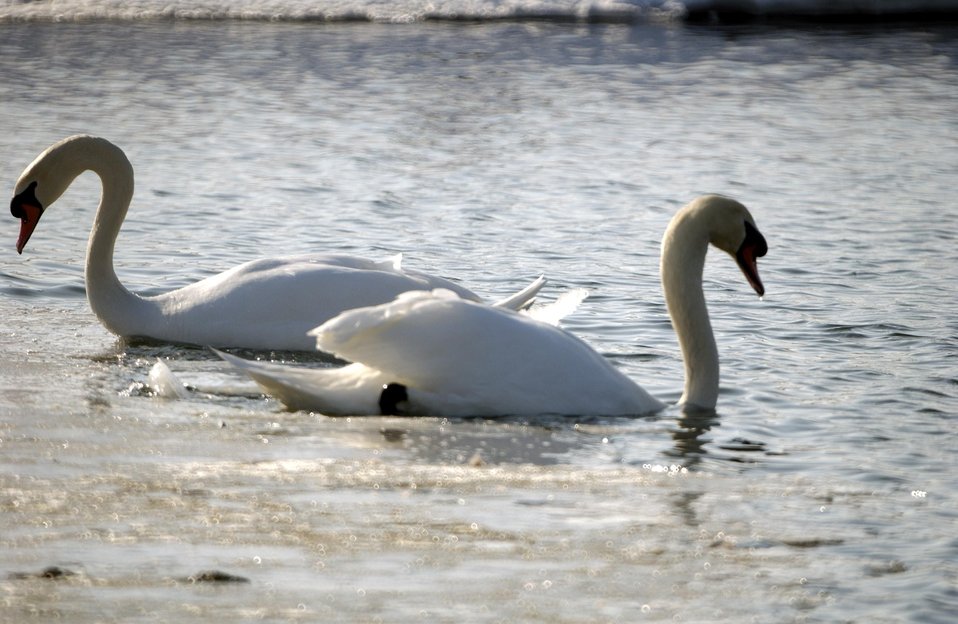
MUTE SWANS IN THE MAIN INJECTOR POND OF THE FERMI NATIONAL ACCELERATOR LABORATORY SITE.

THE SITE IS HOME TO A VARIETY OF BIRDS AND VEGETATION. THE FERMI NATIONAL ACCELERATOR LAB ADVANCES THE UNDERSTANDING OF THE FUNDAMENTAL NATURE OF MATTER AND ENERGY BY PROVIDING LEADERSHIP AND RESOURCES FOR QUALIFIED RESEARCHERS TO CONDUCT BASIC RESEARCH AT THE FRONTIERS OF HIGH ENERGY PHYSICS AND RELATED DISCIPLINES.